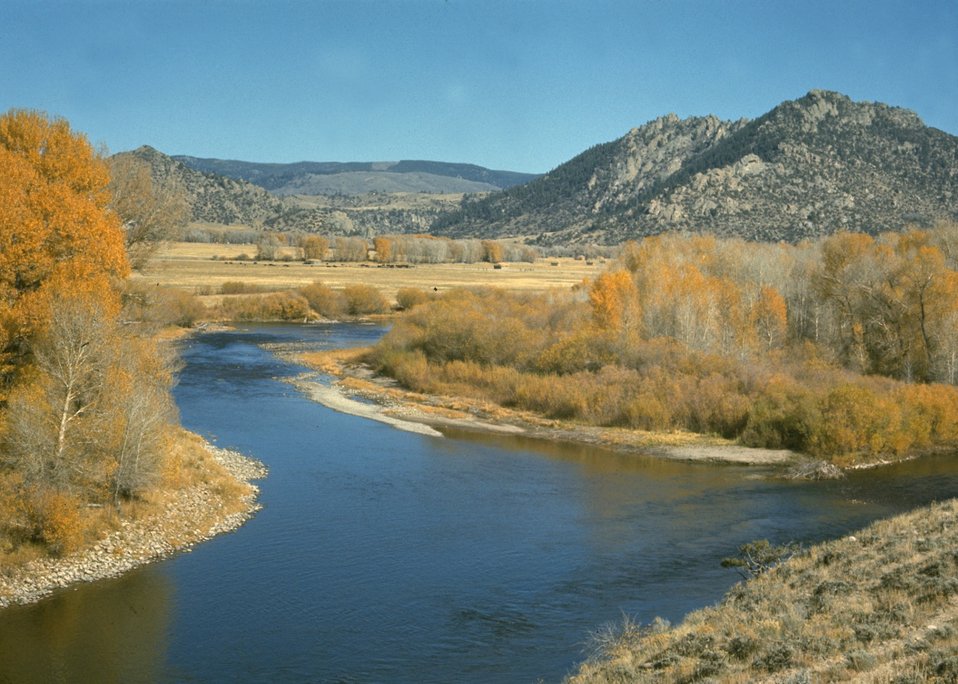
Scenic view of river and golden aspen trees.